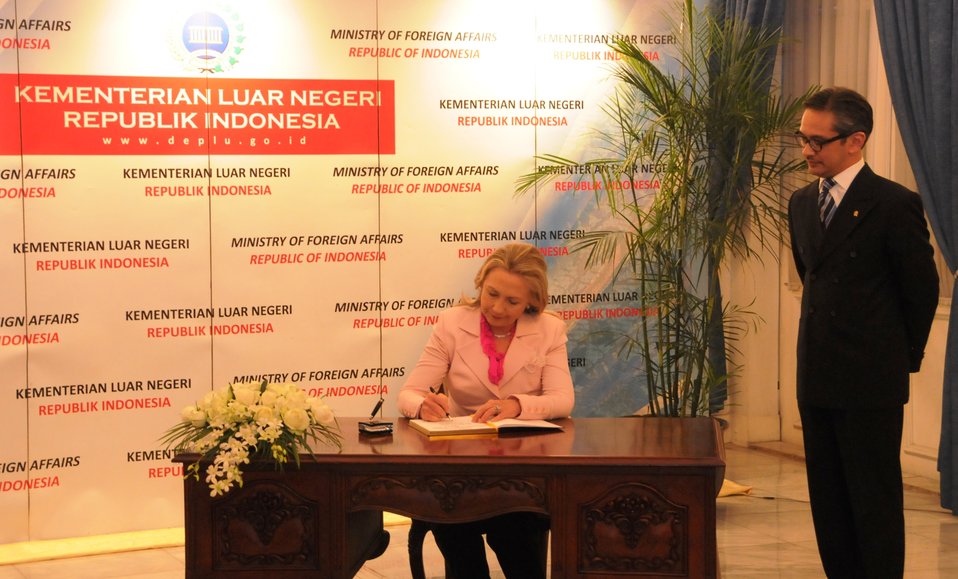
Secretary Clinton With Foreign Minister Natalegawa in Indonesia

U.S. Secretary of State Hillary Rodham Clinton meets with Indonesian Foreign Minister Raden Mohammad Marty Muliana Natalegawa during a press conference after their meeting in Jakarta, Indonesia, September 3, 2012.